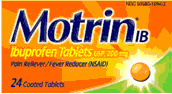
RECALLED - Motrin IB Coated Tablets and Motrin IB Coated Caplets

December 21, 2011 - McNeil Recall of Motrin IB Tablets and Caplets.